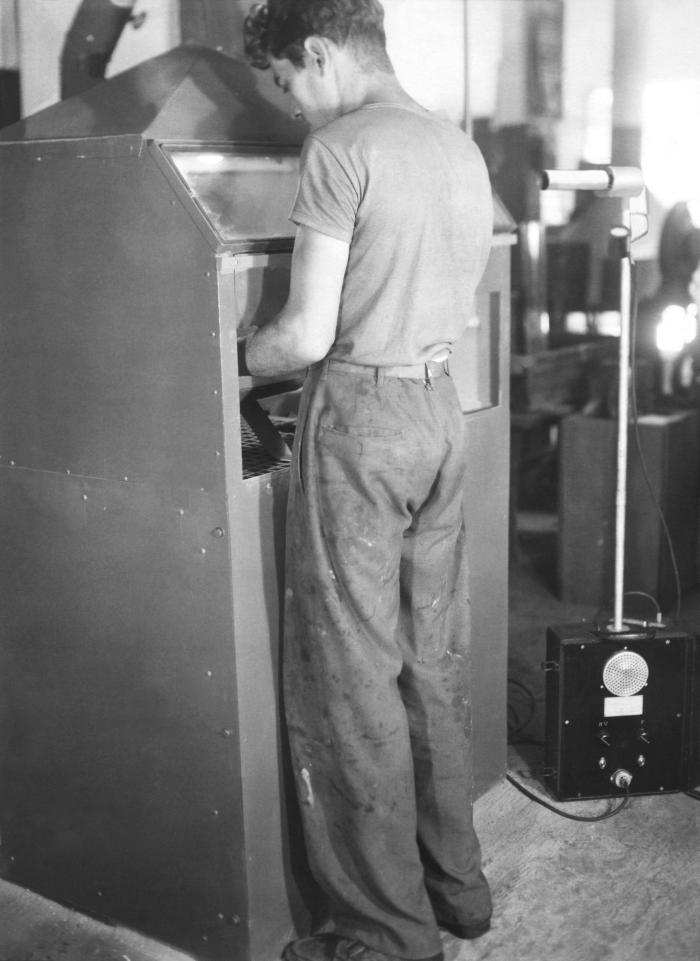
This 1949 historical photograph was provided by the Center for Disease Control's (CDC), National Institute for Occupational Safety and Health (NIOSH). Reprinted from the September, 1949, 'Industrial Hygiene Newsletter', it depicted a man working with his hands inside an enclosed booth, its interior accessible through airtight, gloved arm-holes. To his right, and behind him, was an industrial hygiene flowmeter air-sampling apparatus. The flowmeter was monitoring the quality of the air around his workstation.